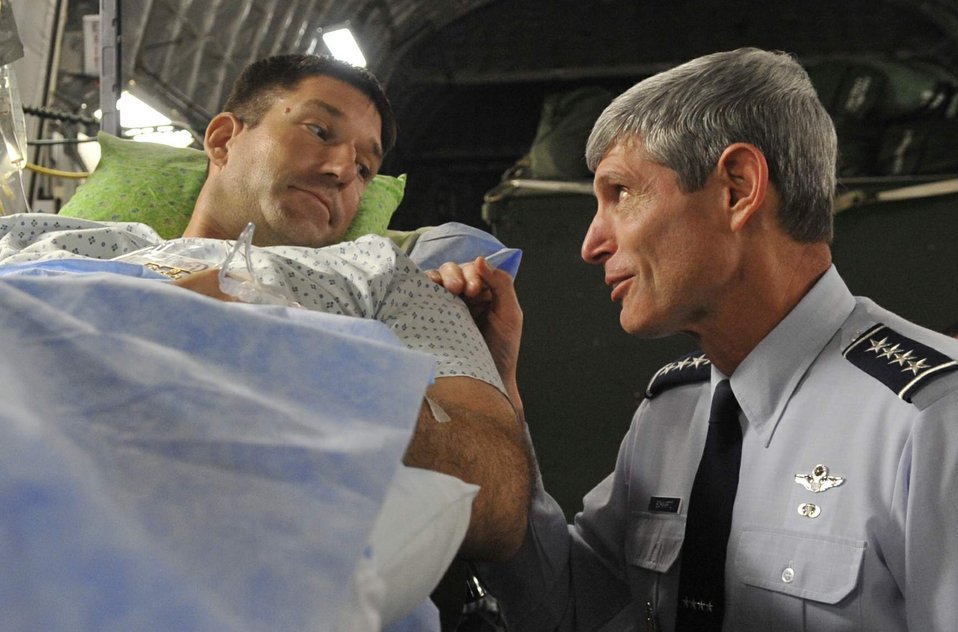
Military members, families keys to year of success

Air Force Chief of Staff Gen. Norton A. Schwartz speaks with Tech. Sgt. Michael Williams, a returning wounded warrior, during an aeromedical evacuation mission on the flightline Aug. 7 at Andrews Air Force Base, Md. The 779th Medical Group has the busiest aeromedical staging facility in the continental United States, caring for more than 100 wounded and ill returning each week.